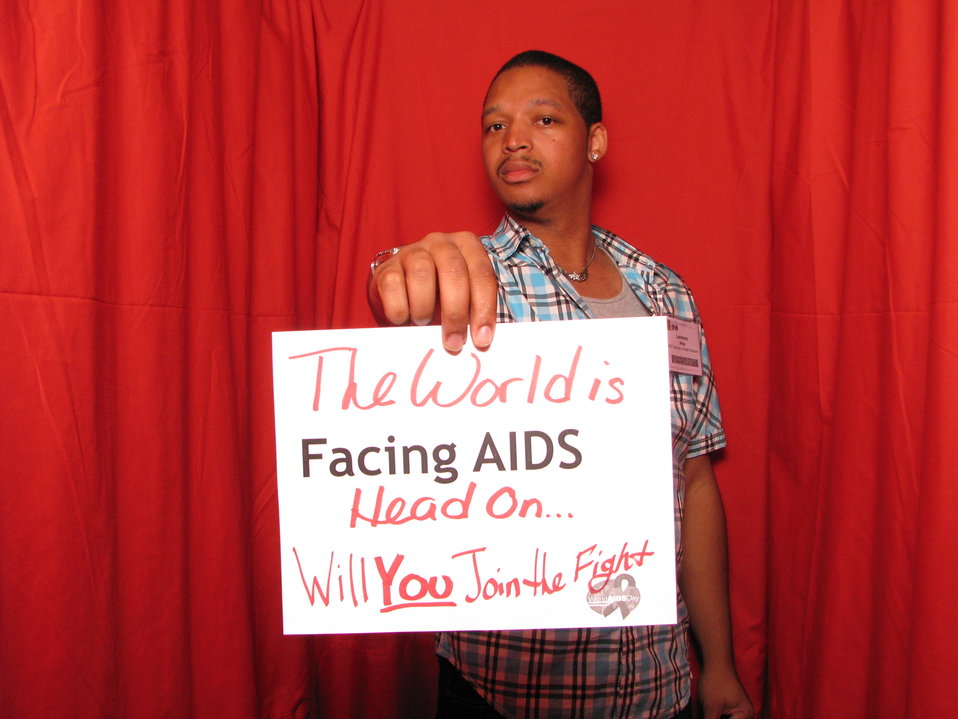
The World is FACING AIDS head on... Will you Join the Fight?

From the AIDS.gov photo booth at the U.S. Conference on AIDS, September 2010 (Orlando, FL).